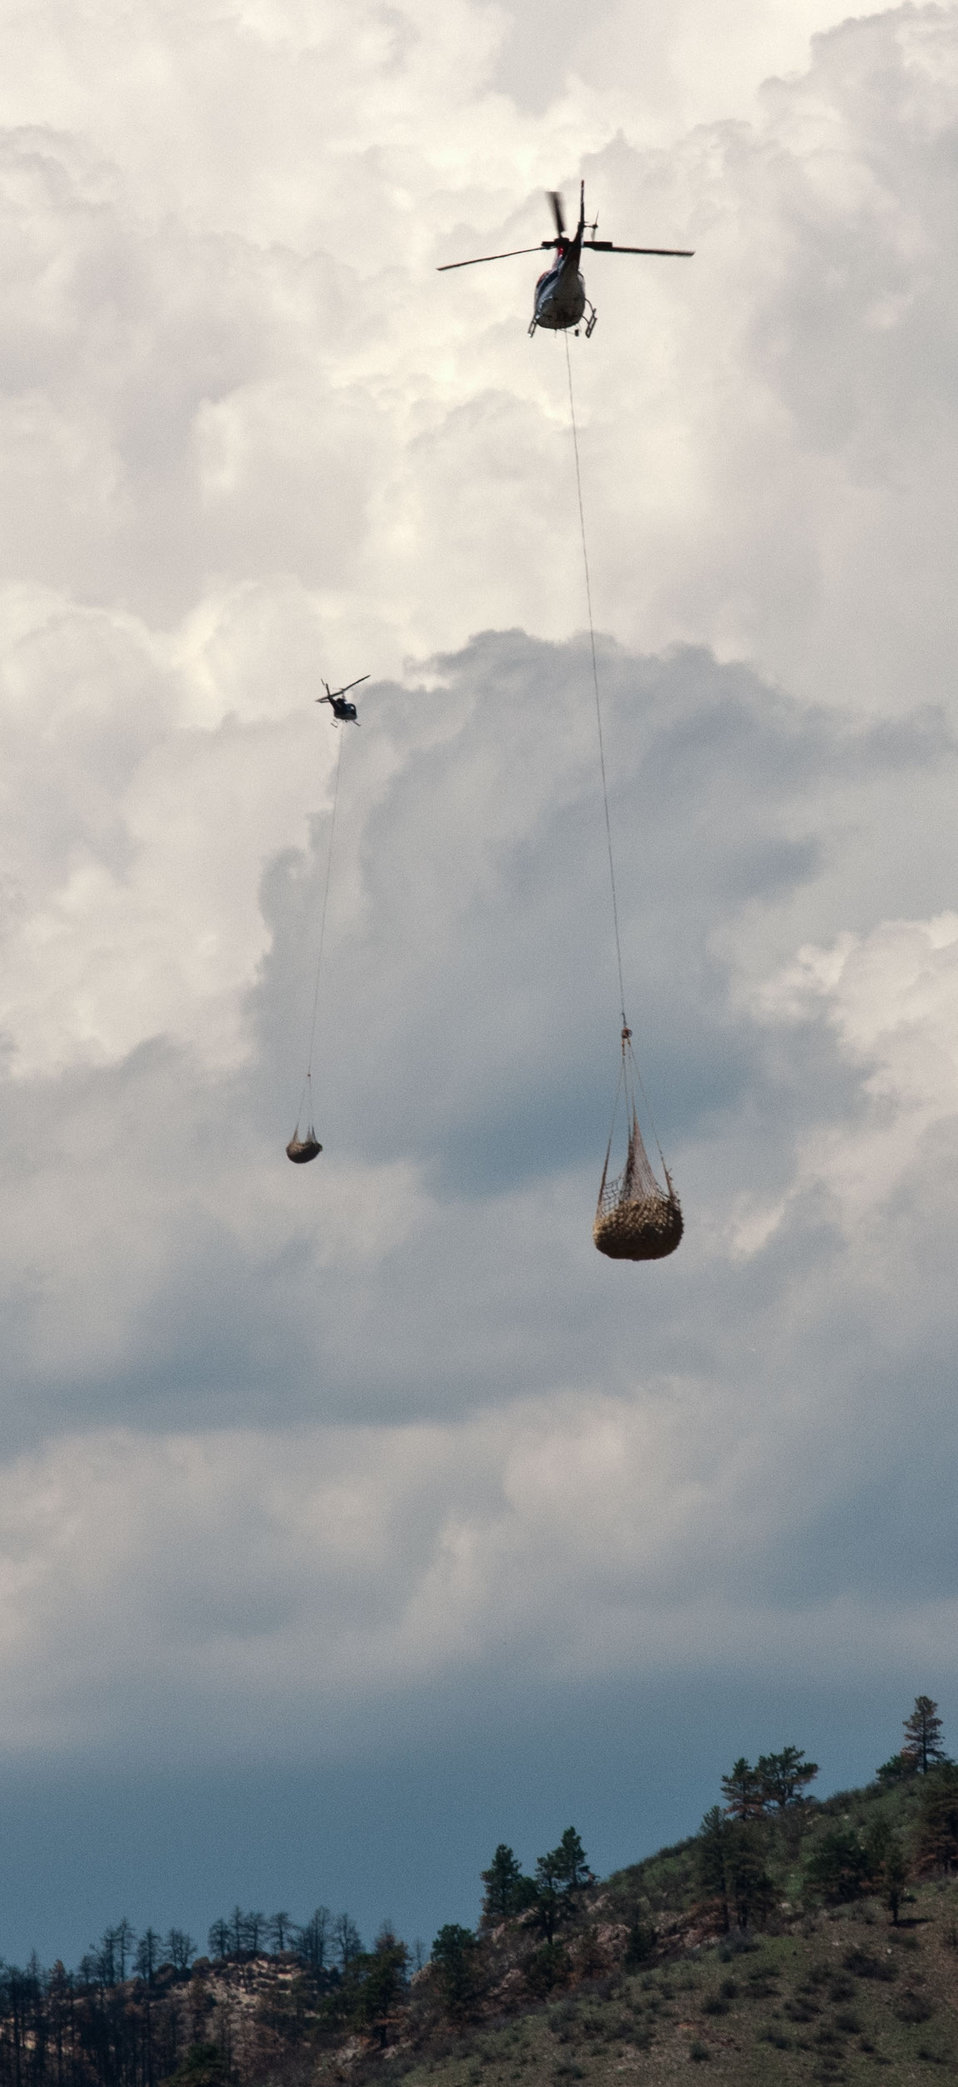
Helicopters come and go in the continuing aerial application of straw to mitigate soil and ash runoff from the mountainous terrain leading to Seaman Reservoir, drinking water resource for the City of Greeley, on Friday, July 20, 2012, near Fort Collins, Colorado. A Bell UH-1H (2-blade rotor) and A-Star Model B (3-blade rotor) take turns picking up loads of straw from the landing zone at the foot of the reservoir spillway. The 100-150- cables hold and release loads of certified straw weighing 1,400 – 2,000 pounds. Forest service lands received straw, while private and other lands receive a seed mix and straw to promote ground cover plant growth on ash-covered lands. In total, 1,800 tons of straw will be applied during the 14-day operation. One quarter of the cost was paid by the City of Greeley and the U.S. Department of Agriculture funded the remainder. The Hewlett Gulch Fire was started by a camper’s alcohol stove, on May 14, at the saddle of a picturesque mountain ridge along the Hewlett Gulch Trail of Poudre Canyon, in the Roosevelt National Forest, 60 miles north of Denver. At it’s more than 400 firefighters were battling fires being pushed by 50 mph winds that helped blacken over 12-square-miles of dry ground cover, brush and trees. Many of the trees were already dead and tinder dry from beetle-kill. The water in the reservoir remains clean and clear, while downstream water flow has gone from famous Colorado clear water to nearly black flows of water heavily laden with ash, silt, and burnt debris that recent thunderstorms have already washed down from the mountainsides.